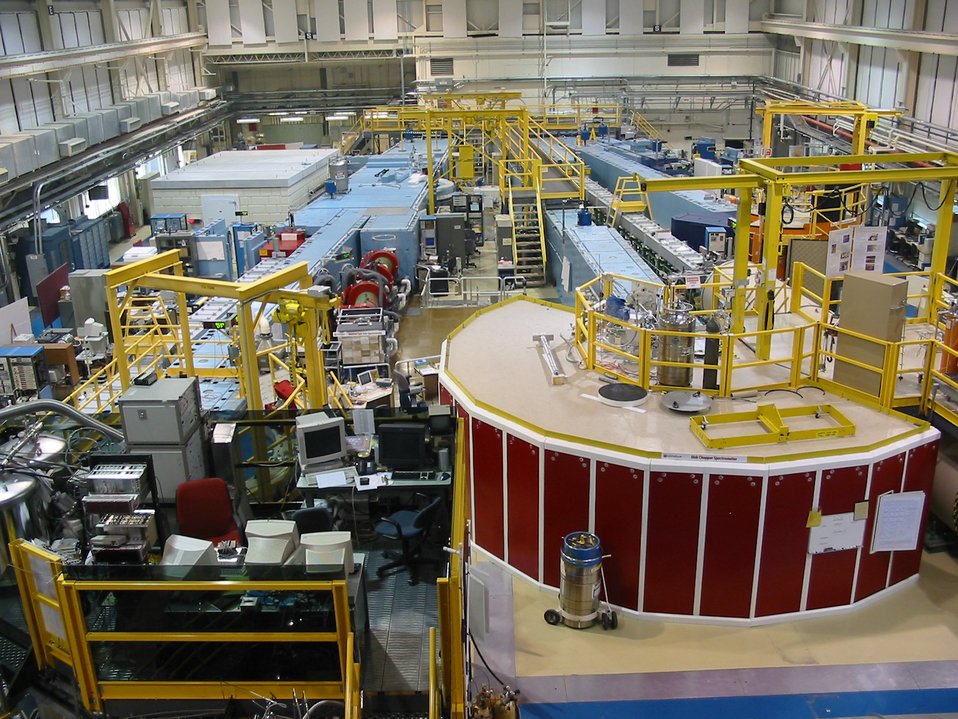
Neutron Research facility

Guide Hall of the NIST Center for Neutron Research. The NIST Center for Neutron Research (NCNR) serves more customers than all other U.S. neutron facilities combined. Beams of cold, slowed down neutrons pass through guide tubes (blue structures) to reach specialized instruments where they are used as probes to see material structures.